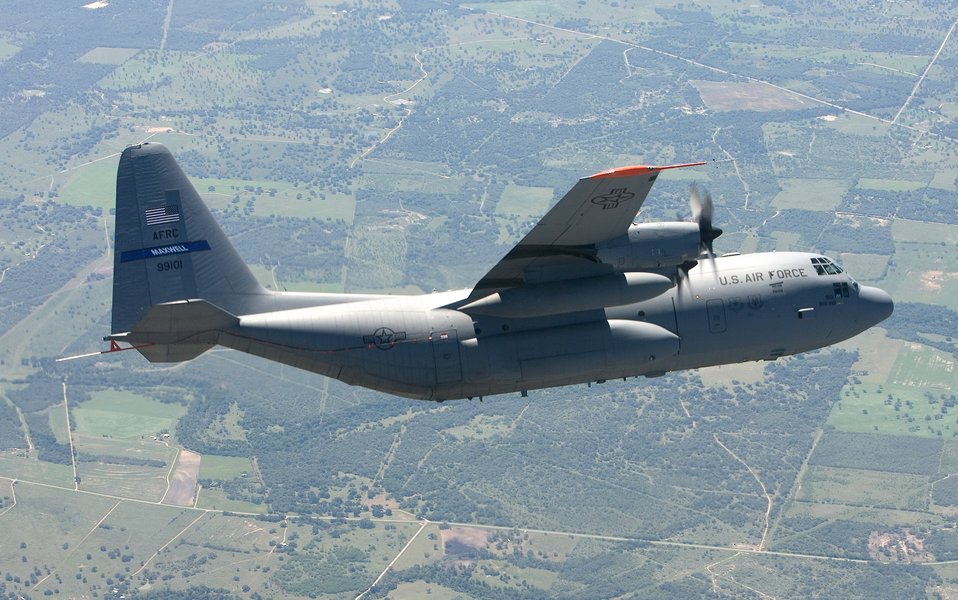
C-130 AMP flies for first time

A specially modified C-130 Hercules banks over the Texas countryside Sept. 19 during its initial test flight. The Hercules, which took off from Lackland Air Force Base, Texas, was modified under the C-130 Avionics Modernization Program which included a comprehensive upgrade of the avionics system that increases situational awareness for the warfighter tenfold over old analog cockpits, dramatically increasing information available to aircrews at a glance, simplifying tasks and decreasing workload.